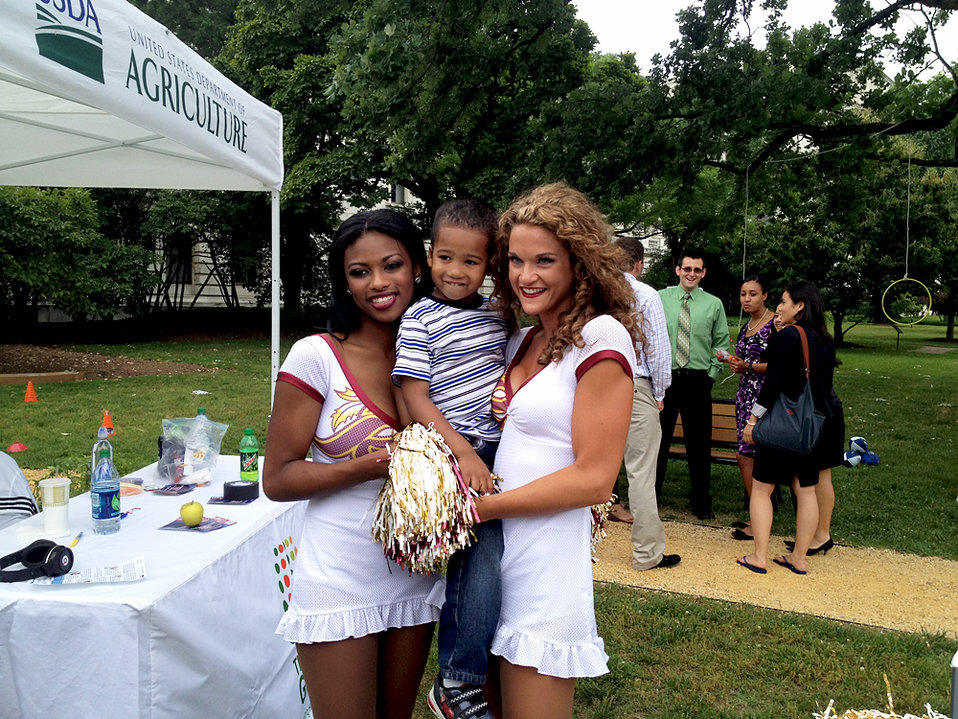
Bronson Brown poses with National Football League (NFL) Washington Redskins Cheerleaders Tena (left) and Rebecca (right) on the opening day of the U.S. Department of Agriculture (USDA) Farmers Market, in Washington, D.C. on June 1, 2012. Children had the opportunity to participate in a day filled with hands-on activities to help enhance their commitment to healthy eating and 60 minutes of physical activity every day.